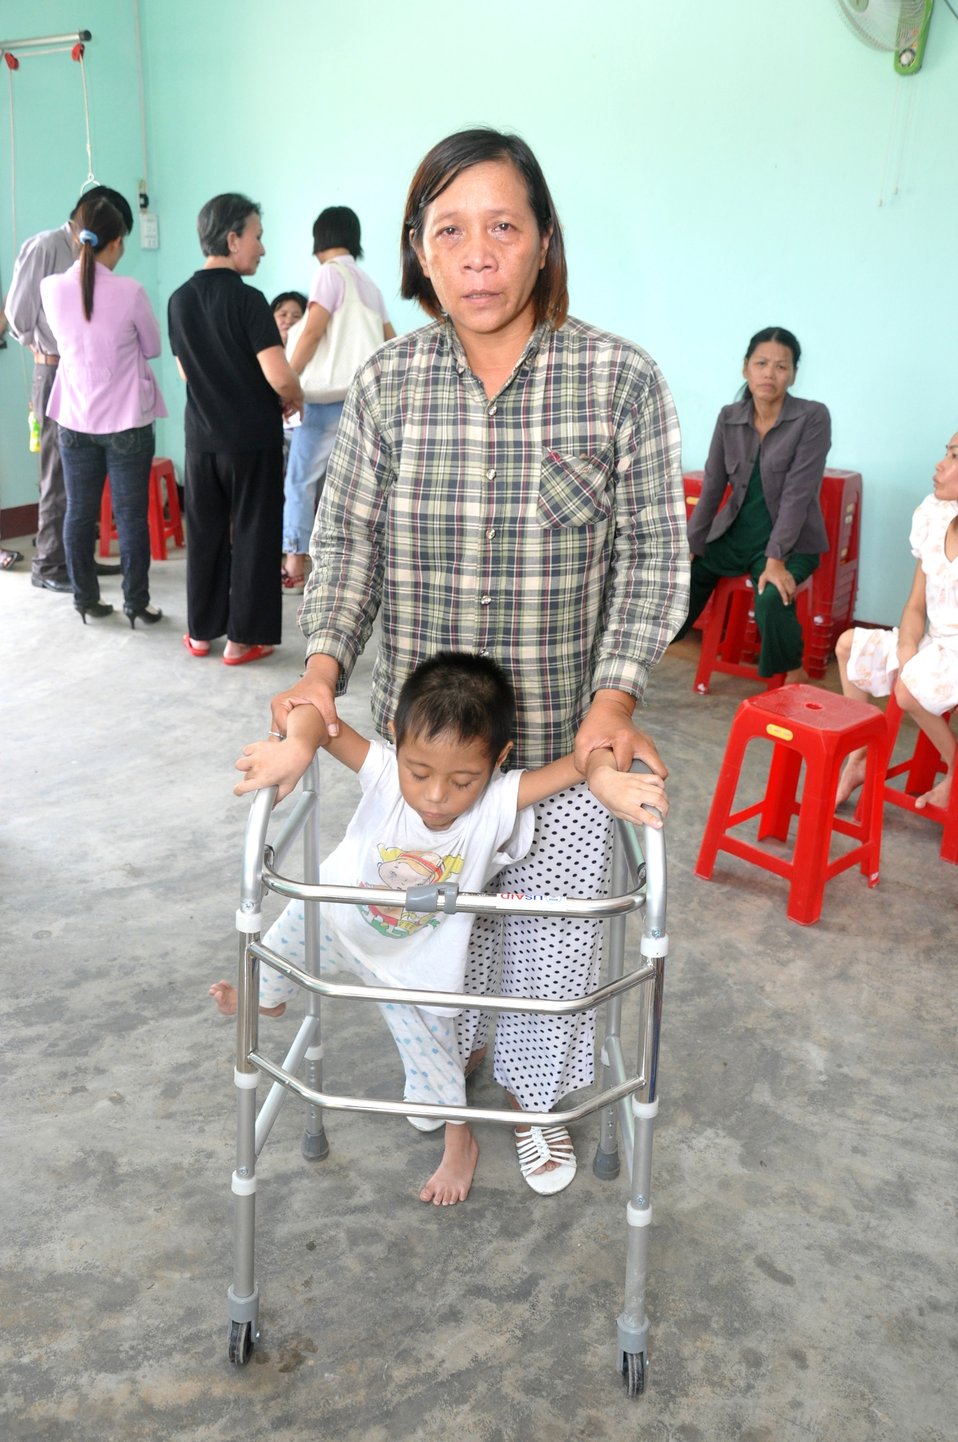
USAID supports a community rehabilitation unit in Danang.

Danang, June 10, 2013.